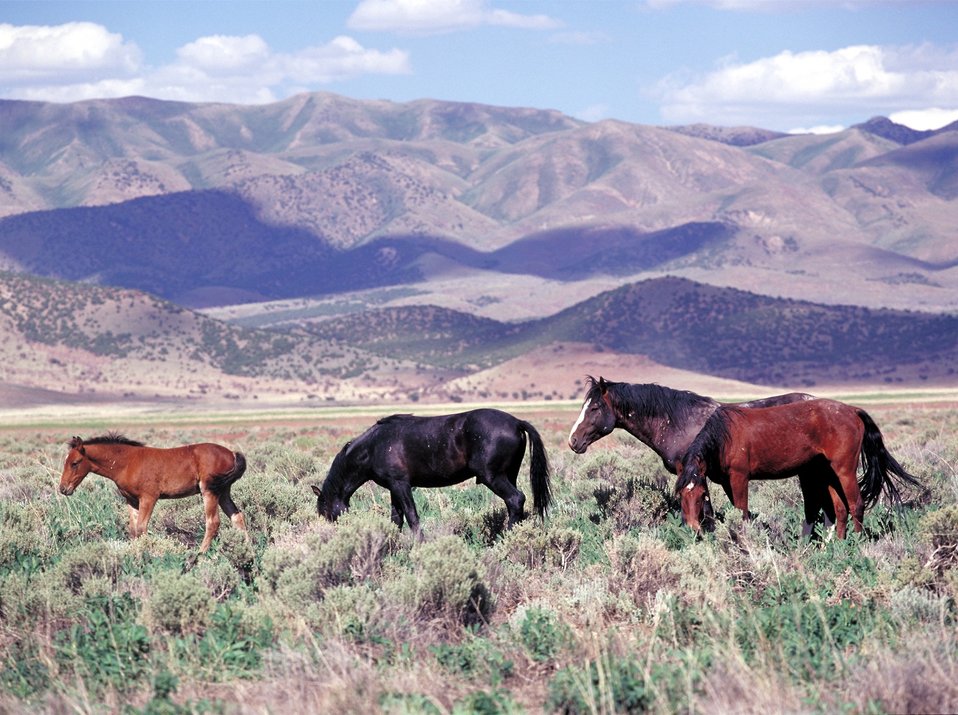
Onaqui Herd near Dugway, Utah.